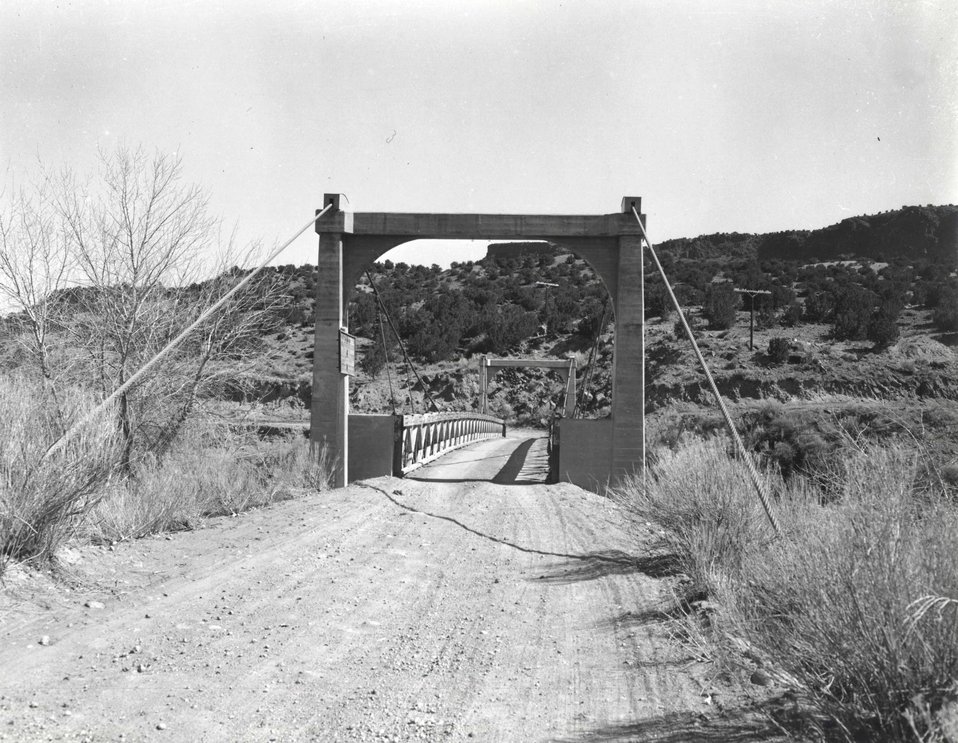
OTTOWI BRIDGE